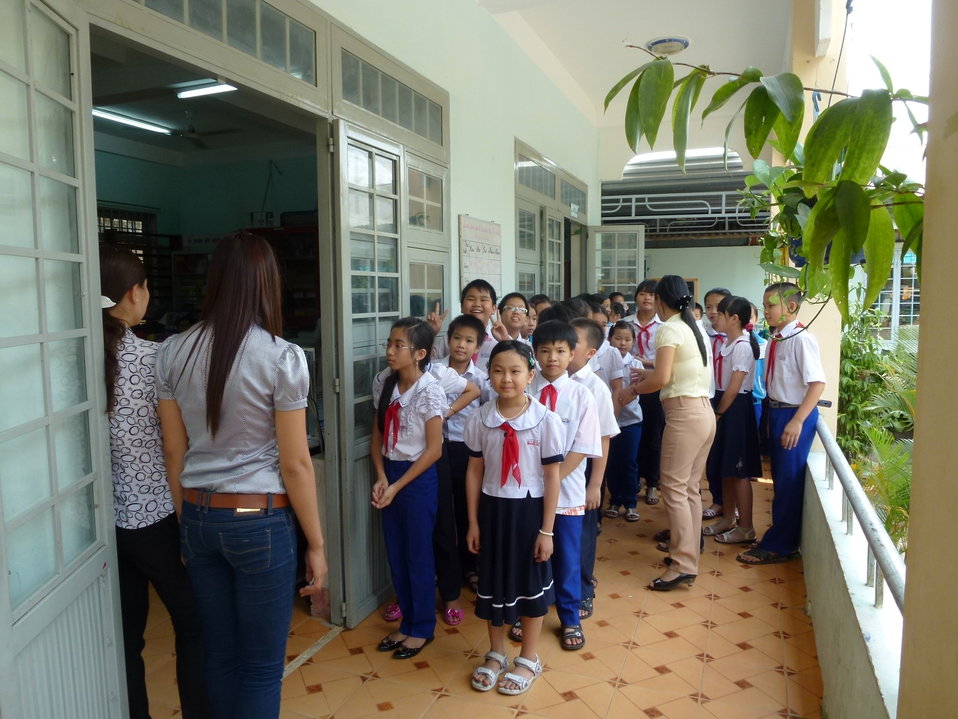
Eye screening at Phan Dinh Phung Primary School